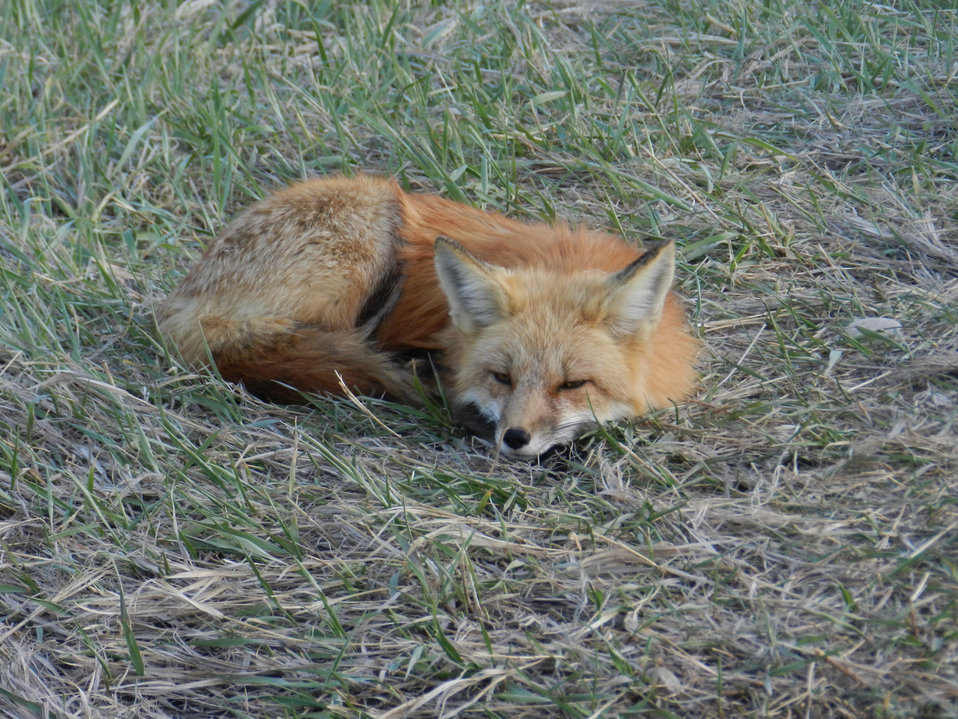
Red fox in urban open space, Fort Collins, CO.

Credit: Pedro 'Pete' Ramirez, Jr. / USFWS